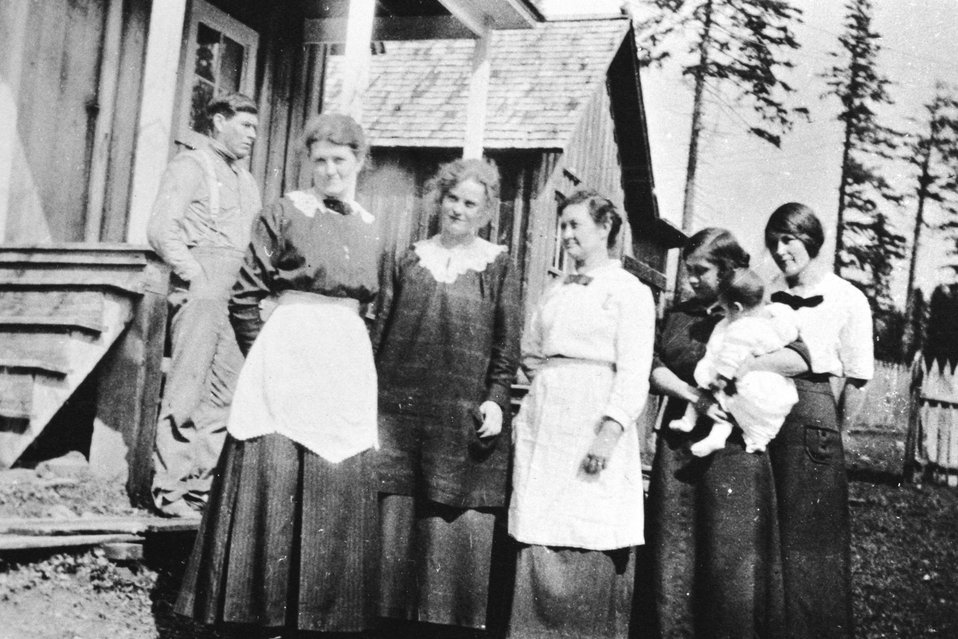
Tom and Bessie Billings with friends at Marial.